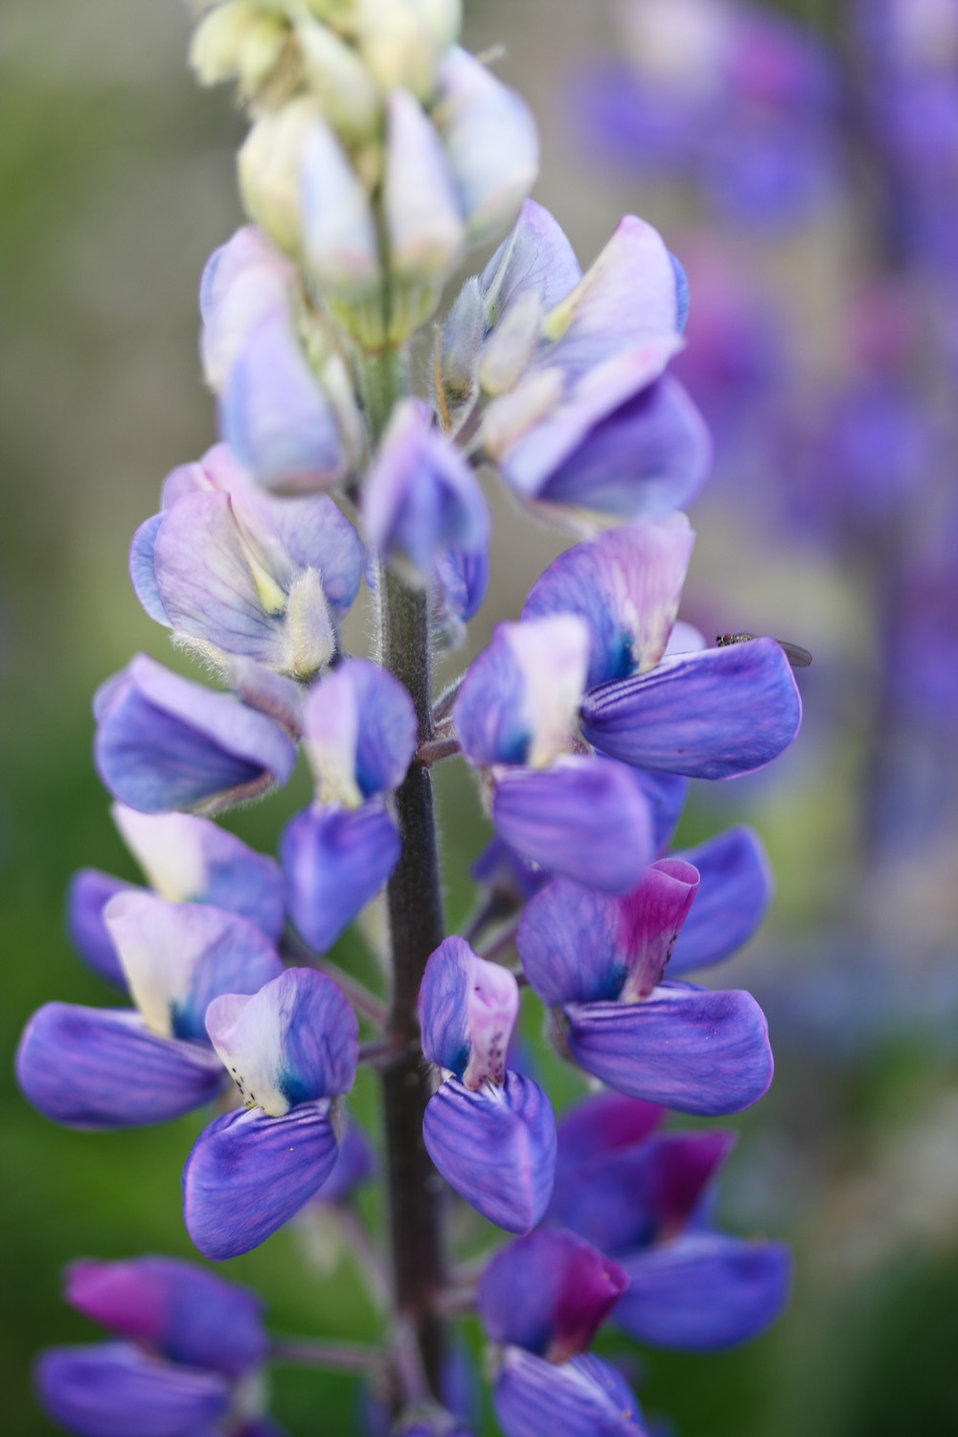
July Lupine

Lisa Hupp/USFWS